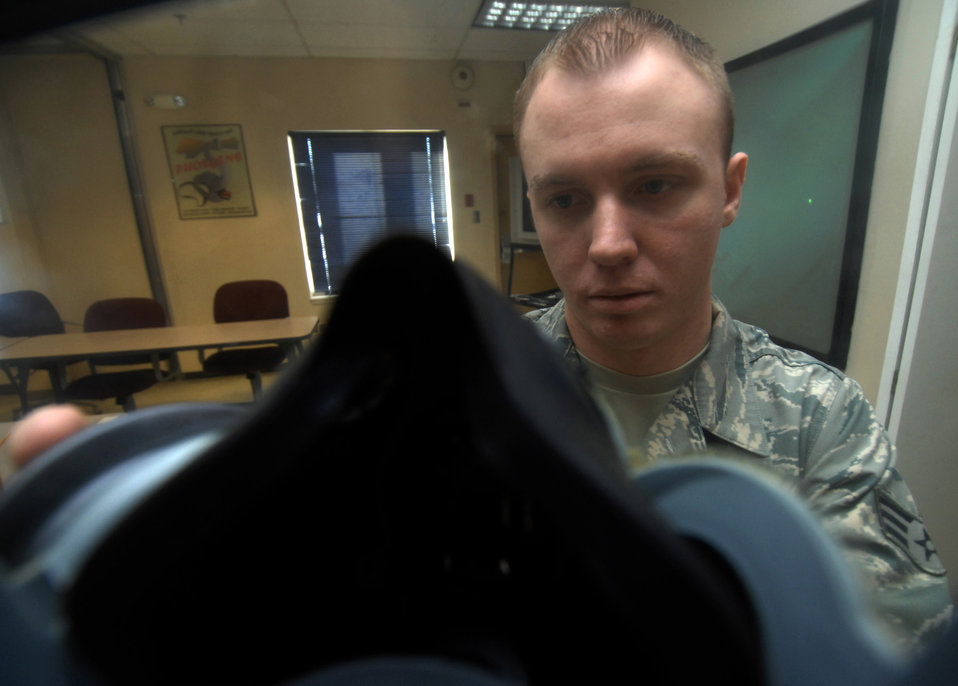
Training that matters

Senior Airman John Buckley inspects a gas mask for cracks and misuse April 7. Airman Buckley is a chemical, biological, radiological, nuclear and high-yield explosives training instructor and responder assigned to the 354th Civil Engineering Squadron at Eielson Air Force Base, Alaska.